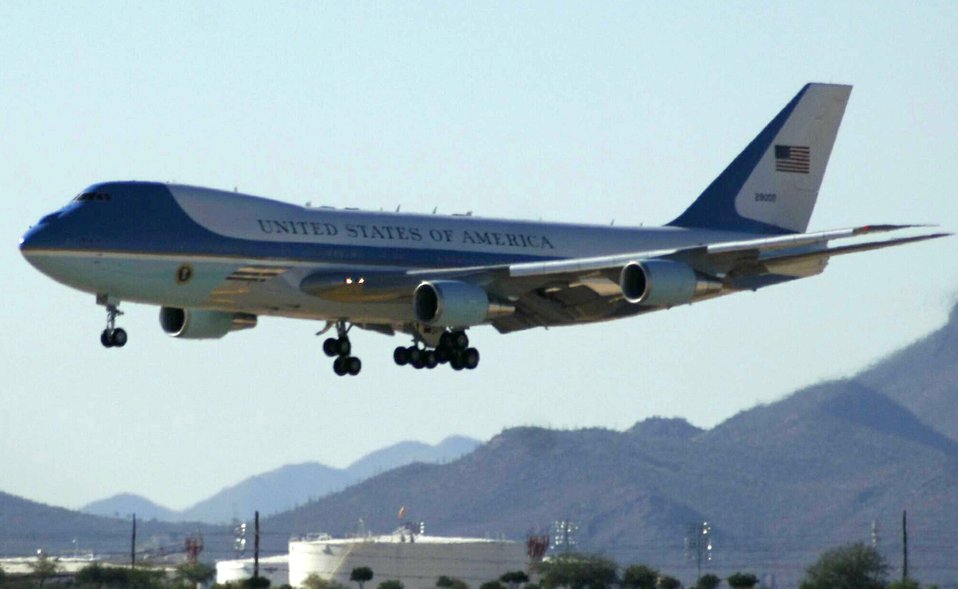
Bush visits Arizona

DAVIS-MONTHAN AIR FORCE BASE, Ariz. (AFPN) -- President George W. Bush arrives in Air Force One. President Bush came to speak about current border patrol issues and immigration laws and policies.